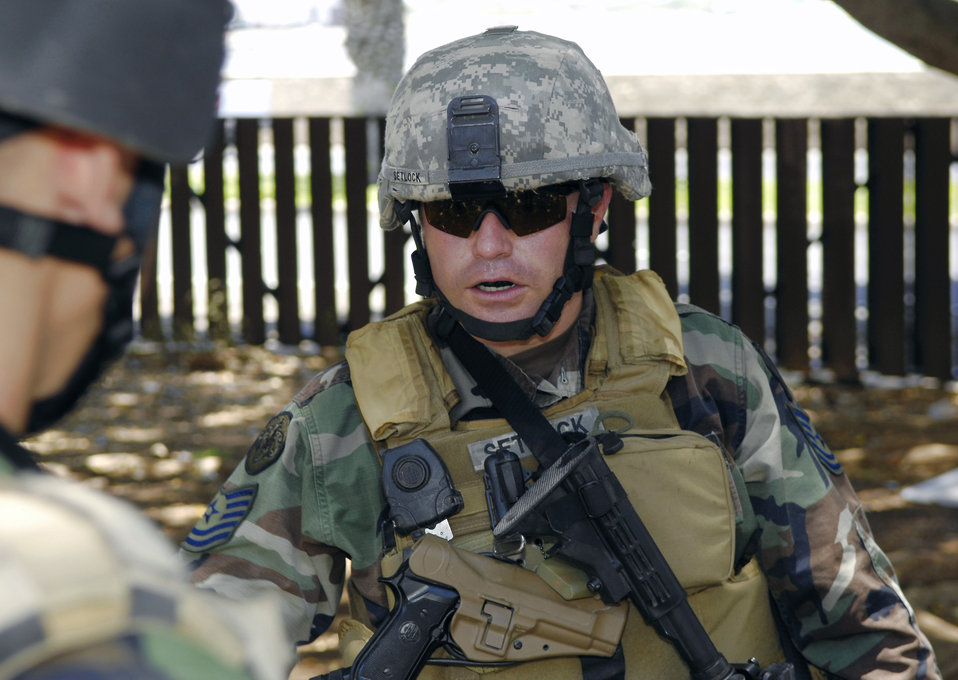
Battlefield Airmen train on Hickam

Tech. Sgt. Richard Setlock, a joint terminal attack controller, briefs his plan of attack to an instructor during close-quarters battle training May 7 at Hickam Air Force Base, Hawaii. The JTACs were using an old housing area on Hickam AFB to conduct realistic training in an urban environment. Sergeant Setlock is assigned to the 25th Air Support Operations Squadron at Wheeler Army Air Field, Hawaii.